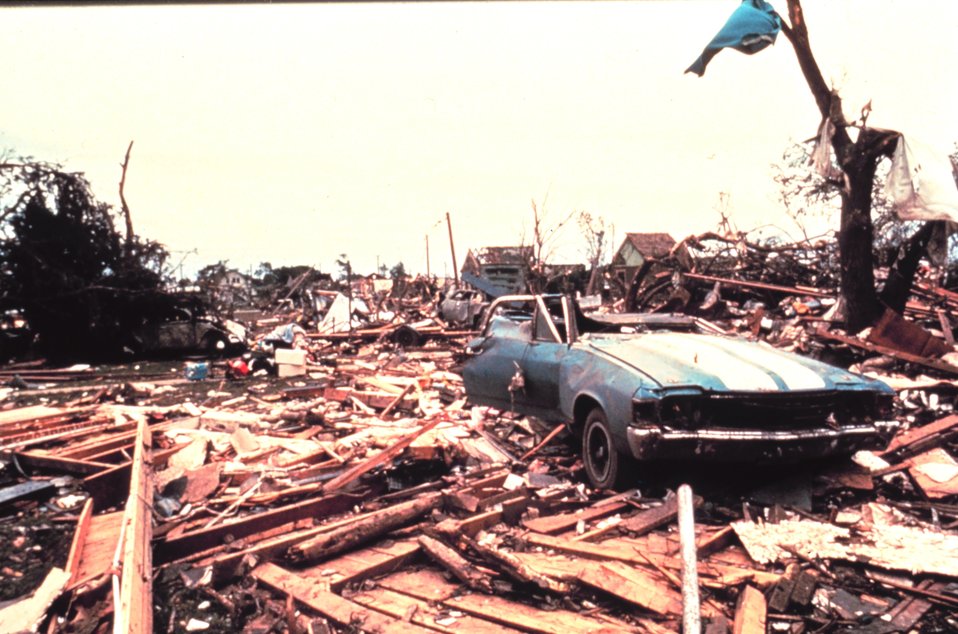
Damage caused by Union City Tornado.